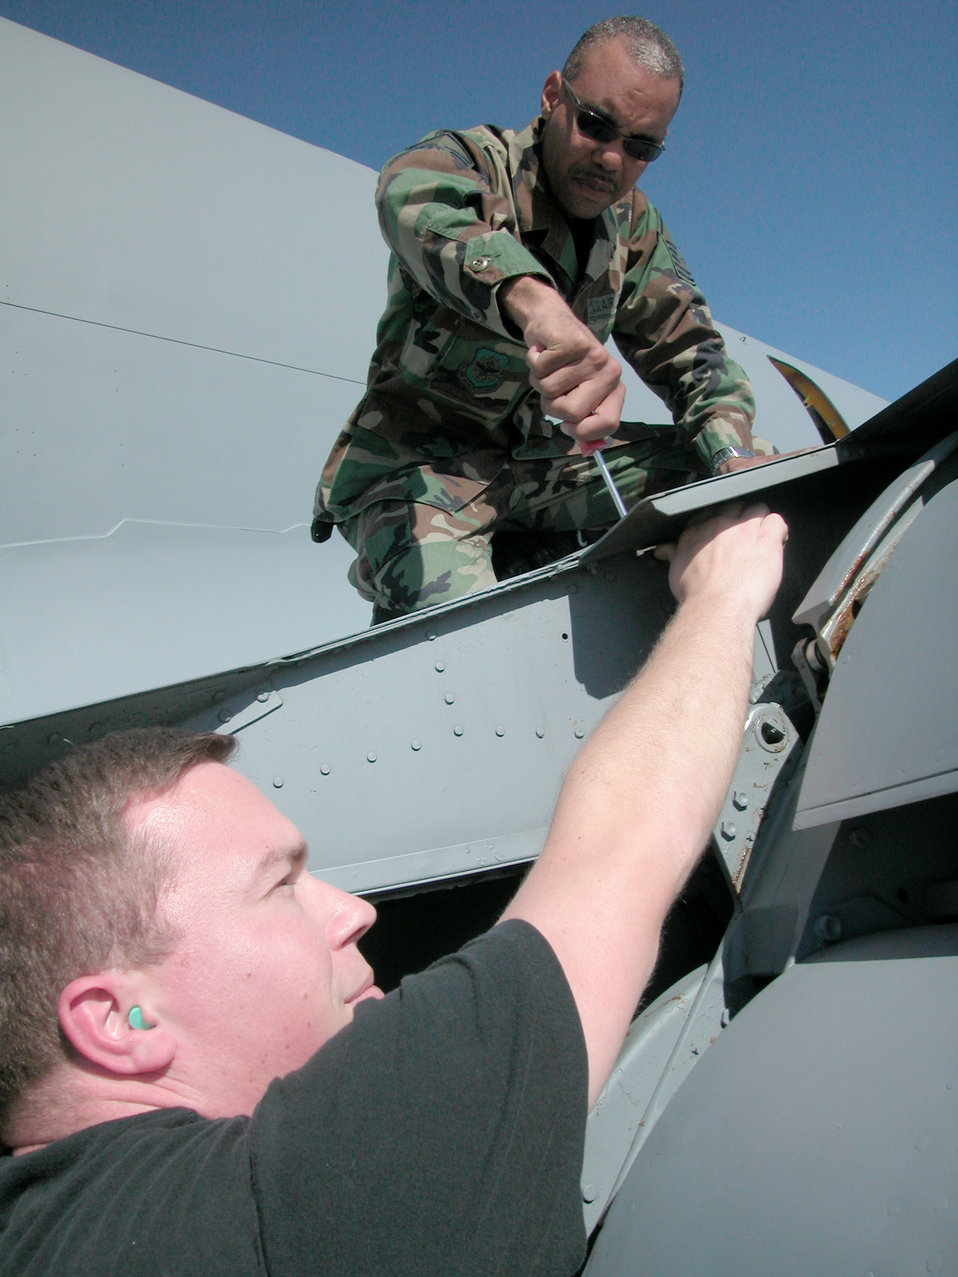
Noble Eagle

BEALE AIR FORCE BASE, Calif. -- Master Sgt. Robert Briggs (above) and Staff Sgt. Brandon Kennerley team-up to replace a wing panel bolt of a KC-135E Stratotanker here March 7. Sergeant Briggs and Sergeant Kennerley are both crew cheif's with the 940th Aircraft Maintenance Squadron. The 940th Air Refueling Wing participates in Operation Noble Eagle missions by providing aerial refueling where ever and when ever it is needed in the western region of the United States.